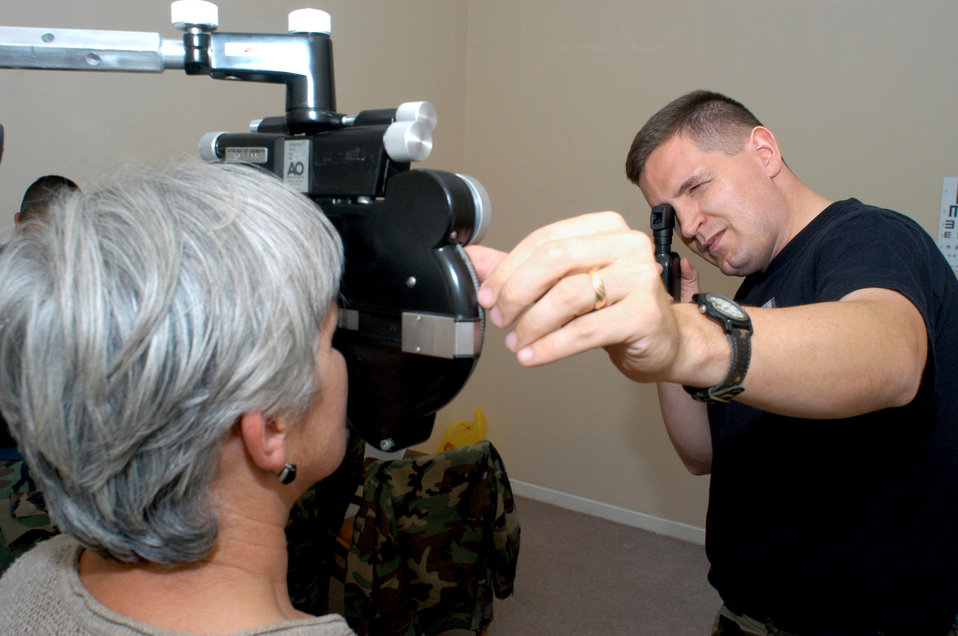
Humanitarian effort

SARTICHALA, Georgia -- Maj. Ryan Traver checks a Georgian patient's eyes to determine her eyeglass prescription at Sartichala Medical Clinic here. Traver and other 86th Medical Group physicians gave care to patients under a humanitarian civic-assistance program. This was in conjunction with a multinational exercise conducted in Georgia from Sept. 8 through 20.